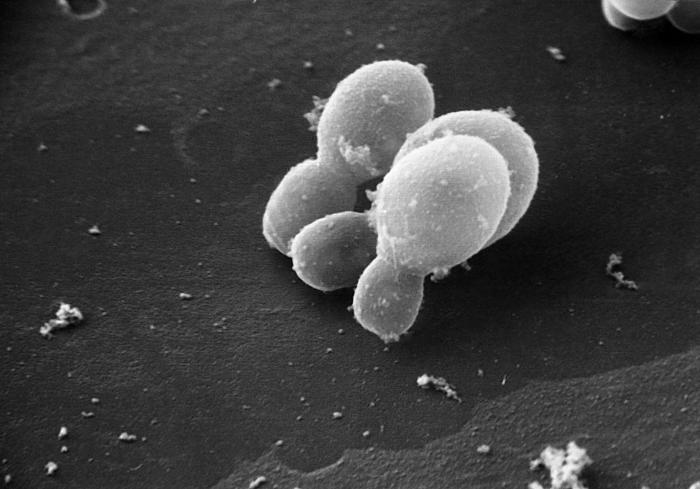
Scanning electron micrograph (SEM) of Malassezia furfur.